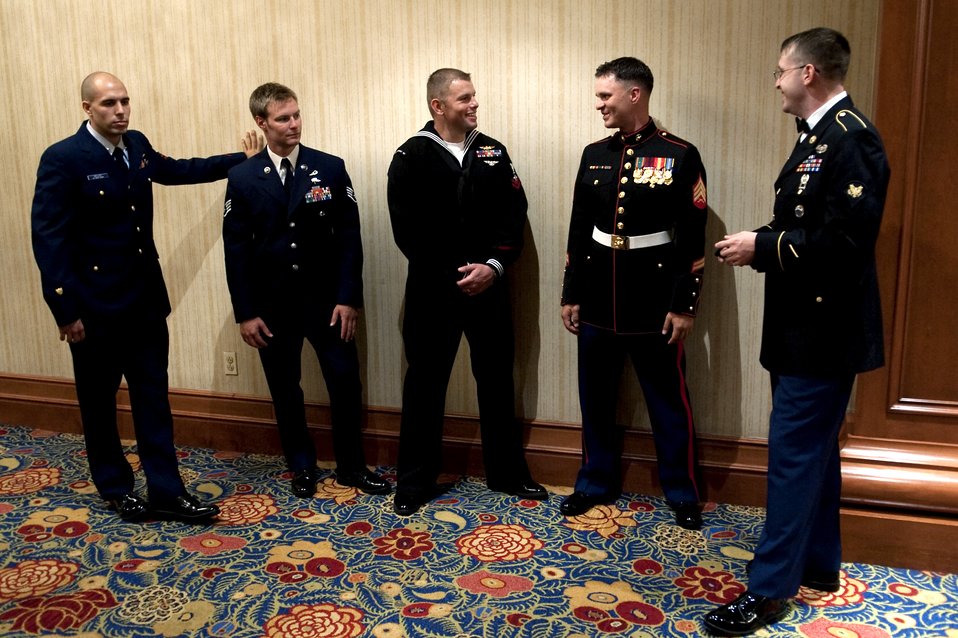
USO gala honors troops, sacrifices

Coast Guard Petty Officer 2nd Class Abram H. Heller, Staff Sgt. Zachary J. Rhyner, Navy Petty Officer 2nd Class William S. Stevens, Marine Sgt. Mark A. Robinson and Army Spc. Michael D. Carter gather before a ceremony recognizing each of them as USO Servicemembers of the Year at the 2009 USO Gala Oct. 7, 2009, in Washington, D.C.